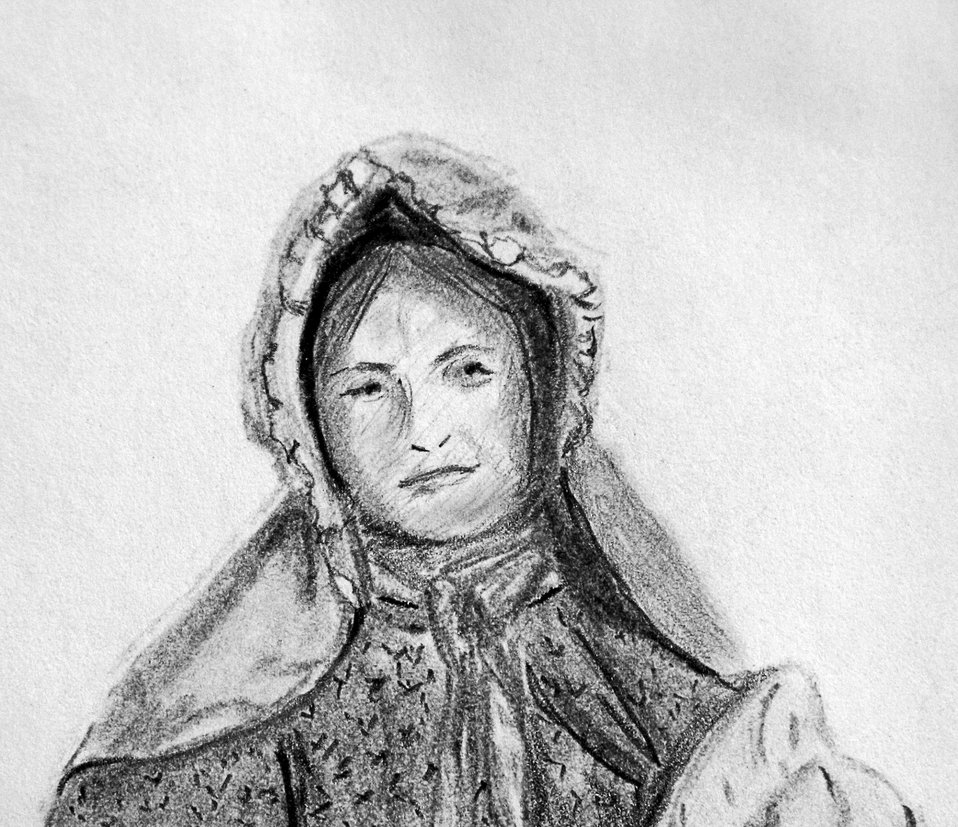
Character artwork by Sarah LeCompte for Nancy Harms's "From Spinning Wheels to Wagon Wheels".